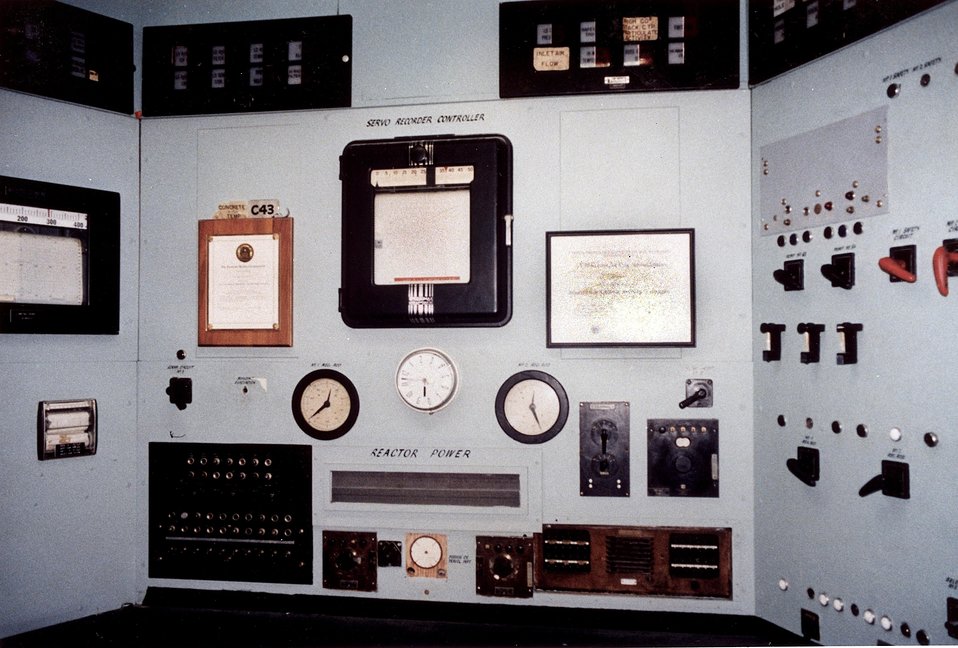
Graphite Reactor-Controls.